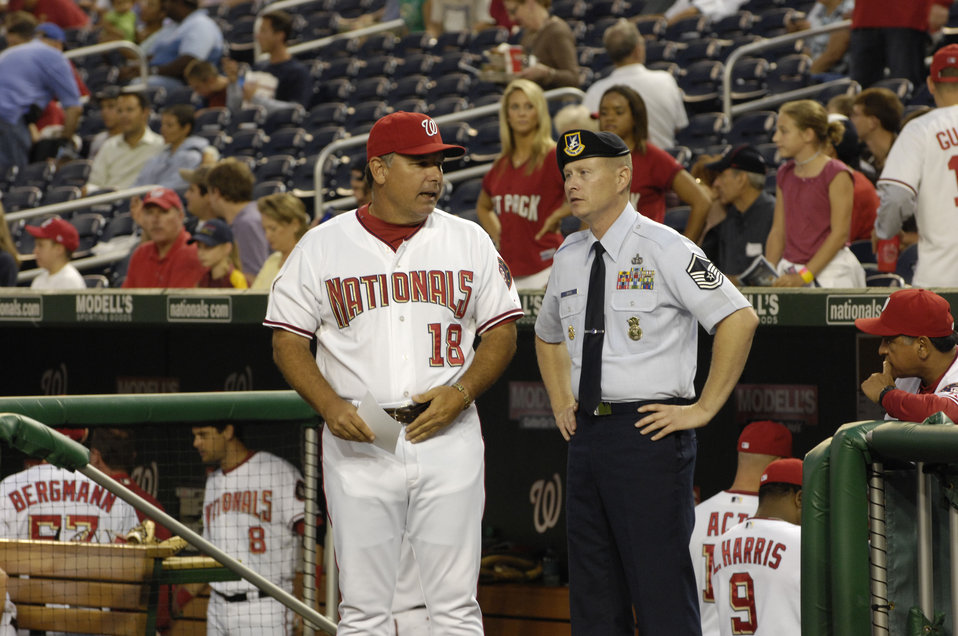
Air Force participates in major league game

Master Sgt. Greg Brock speaks to Washington Nationals third base coach Tim Tolman during the Washington Nationals Air Force Appreciation Night held Aug. 29 at Nationals Park in Washington, D.C. This was the first time the Washington Nationals Major League Baseball team held an event honoring the Air Force at the new park.